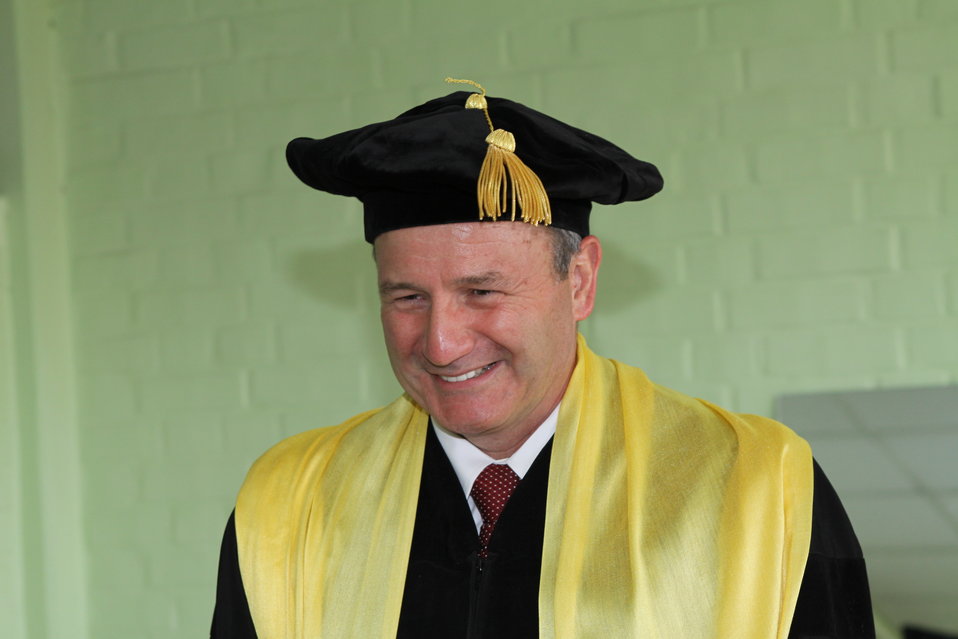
100526 AUAF Graduation 070